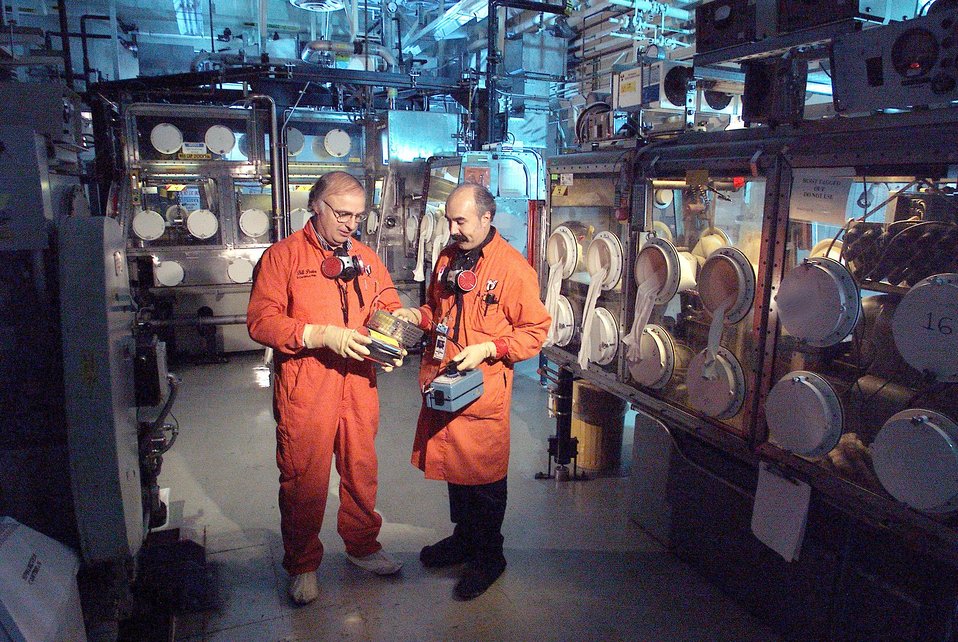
LAWRENCE LIVERMORE NATIONAL LABORATORY'S PLUTONIUM FACILITY WORK AREA FOR HIGH PRECISION MACHINING OF PLUTONIUM.

THE PLUTONIUM FACILITY IS PART OF LLNL'S SUPERBLOCK, WHICH IS HOME TO ONE OF TWO DEFENSE PLUTONIUM RESEARCH AND DEVELOPMENT FACILITIES IN THE U.S. THE SUPERBLOCK HOUSES MODERN EQUIPMENT FOR RESEARCH AND ENGINEERING TESTING OF NUCLEAR MATERIALS. THE PLUTONIUM FACILITY IS THE LARGEST BUILDING IN THE COMPLEX. MOST OF THE WORK AT SUPERBLOCK RELATES EITHER TO THE STEWARDSHIP OF OUR NATION'S ARSENAL OF NUCLEAR WEAPONS OR TO FINDING SAFE WAYS TO DISPOSE OF SURPLUS PLUTONIUM COMPONENTS.